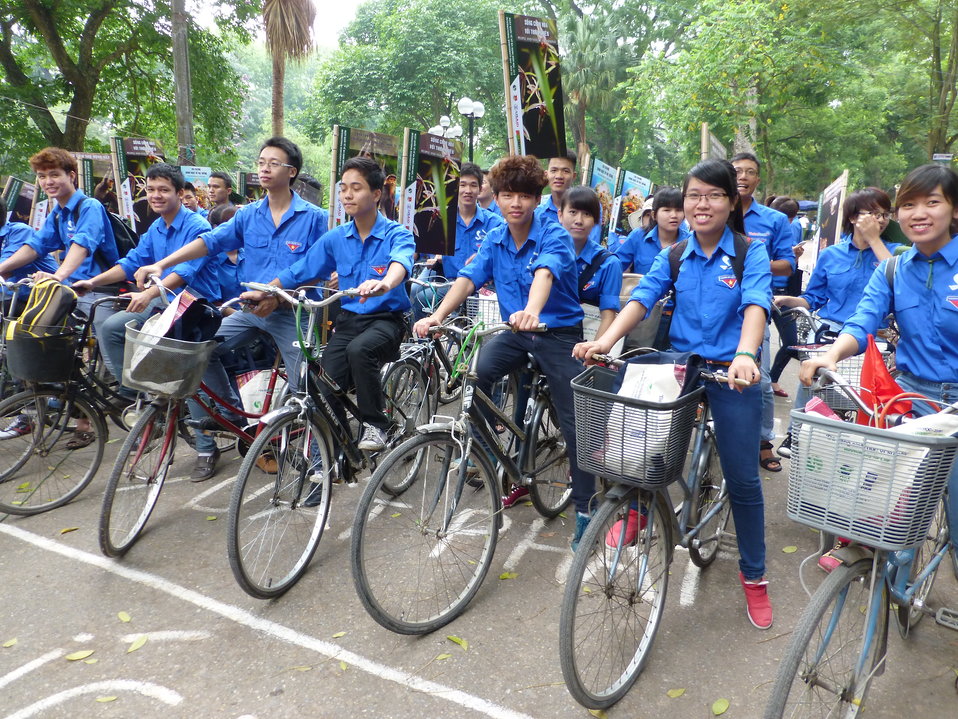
USAID Supports International Day for Biological Diversity in Hanoi